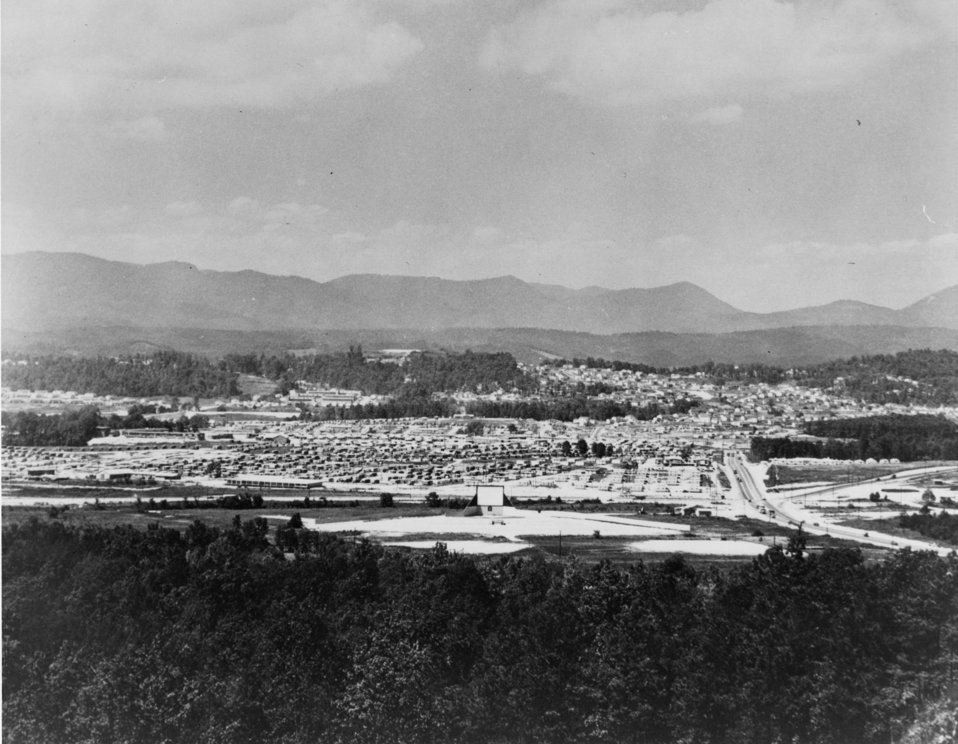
Aerial of Oak Ridge